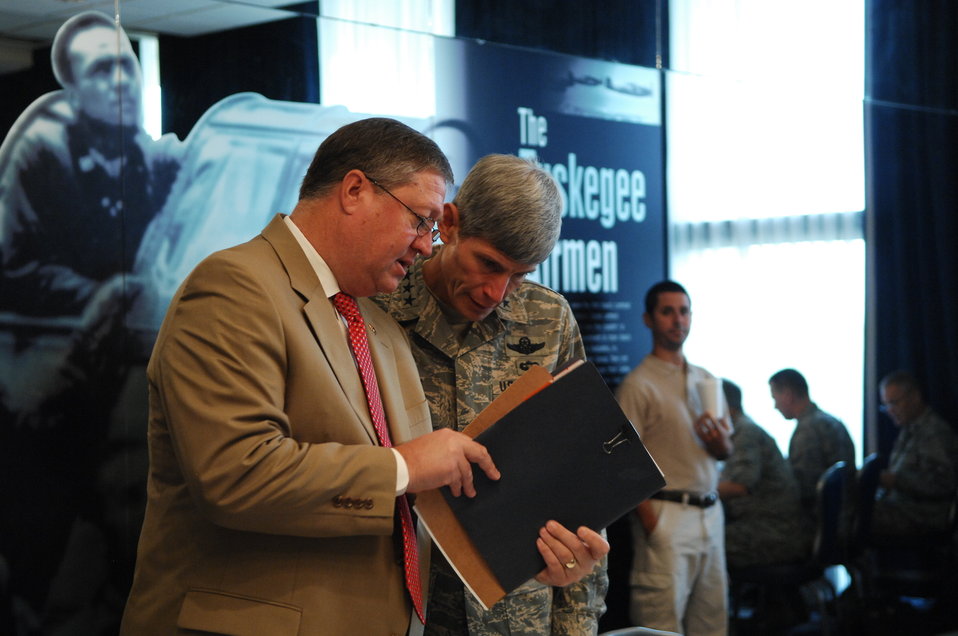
Senior leaders meet to discuss, decide way ahead for force

Acting Secretary of the Air Force Michael B. Donley and Chief of Staff Gen. Norton A. Schwartz discuss conference items Aug. 27, during a strategic summit at Bolling Air Force Base, D.C.